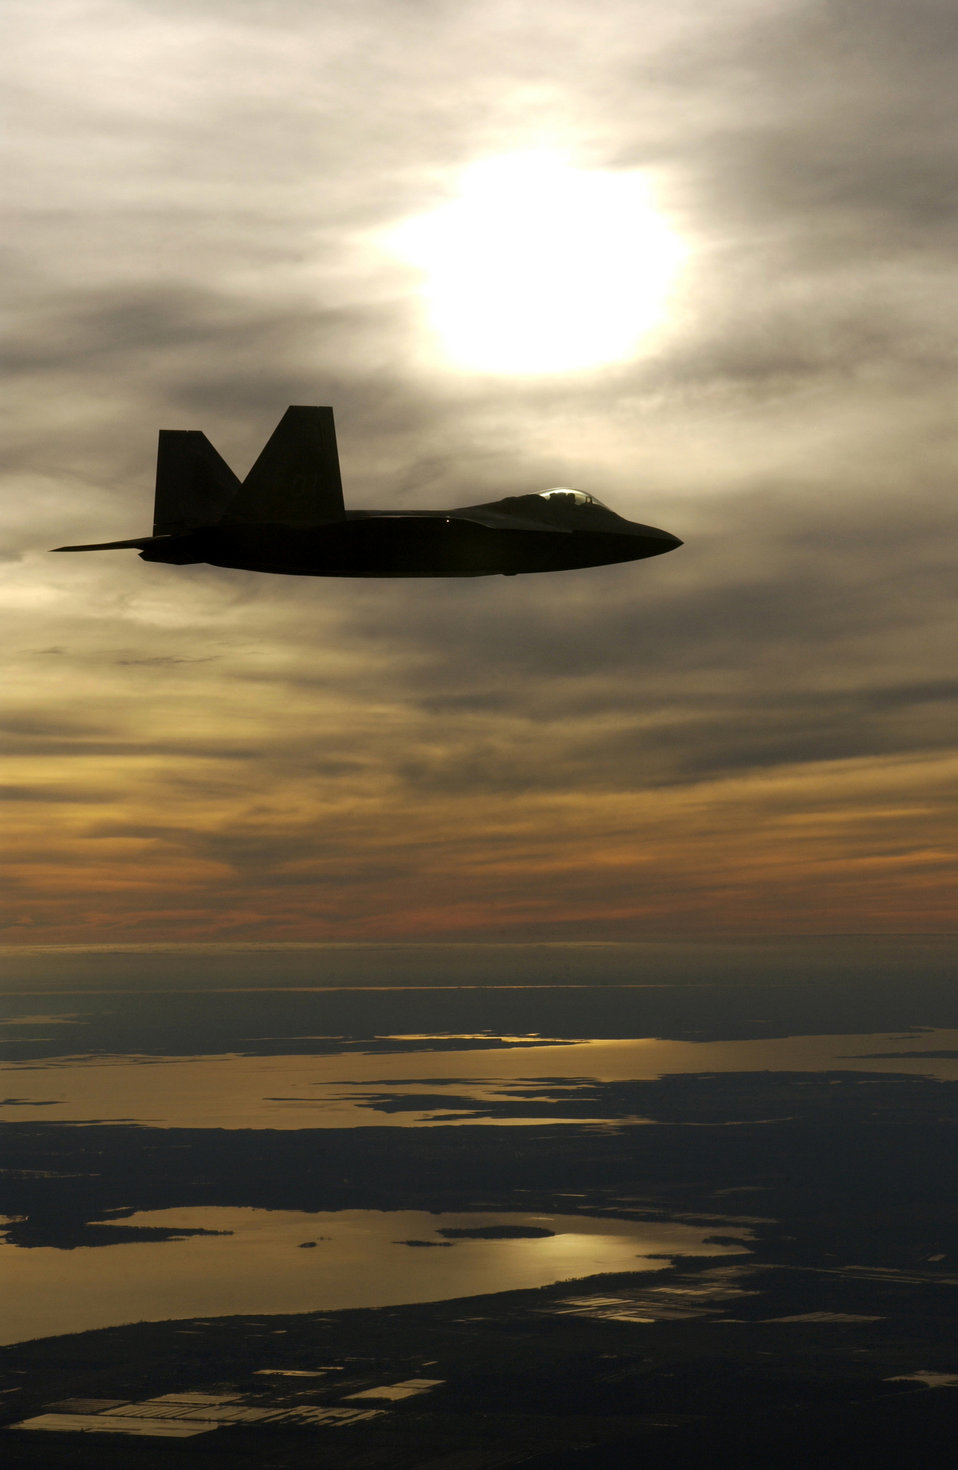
Celebrating 100 years of flight

KILL DEVIL HILLS, N.C. -- Lt. Col. Dave Rose flew the Air Force's new F/A-22 Raptor during a First Flight Centennial Celebration fly-by at the Wright Brothers National Memorial here Dec. 16. Langley Air Force Base, Va., is slotted to be the home of the first operational squadron of F/A-22s by the end of 2004. Rose is from the 422nd Test and Evaluation Squadron at Nellis AFB, Nev.